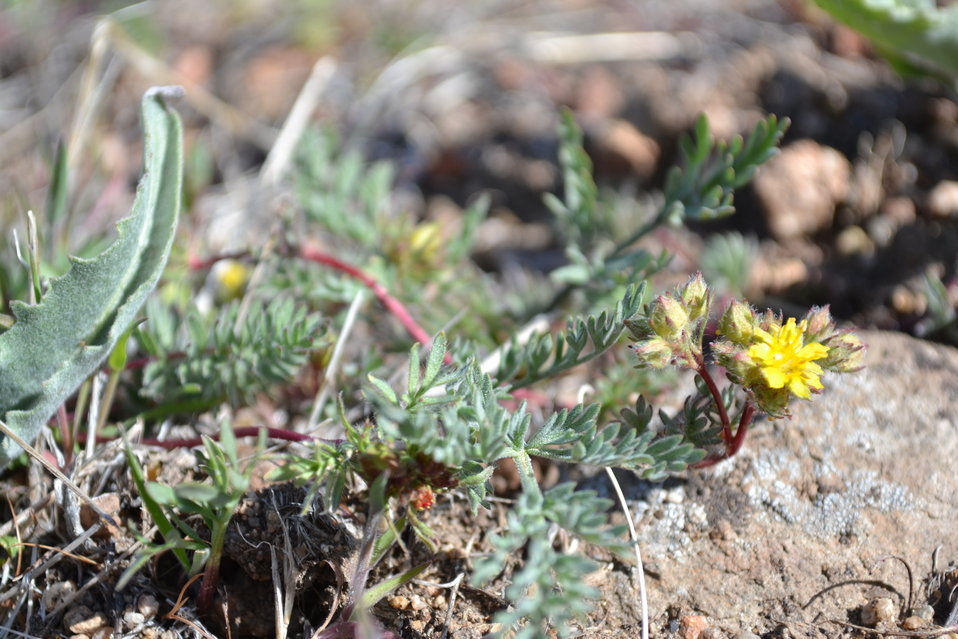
Webber ivesia.

Webber ivesia (Ivesia webberi) is a member of the rose family. It is a low spreading, perennial forb approximately ten inches across with greenish-gray foliage and dark red, wiry stems. The leaves are mostly clustered around the base of the stems, with four to eight pairs of leaflets crowded at the tip, and generally covered with long, silky grayish hairs. Flowering typically begins in May and extends through June. The small bright yellow flowers occur in groups. The whole plant becomes reddish-tinged late in the season. This plant occurs in Washoe and Douglas Counties in Nevada and in Lassen, Plumas, and Sierra Counties in California.